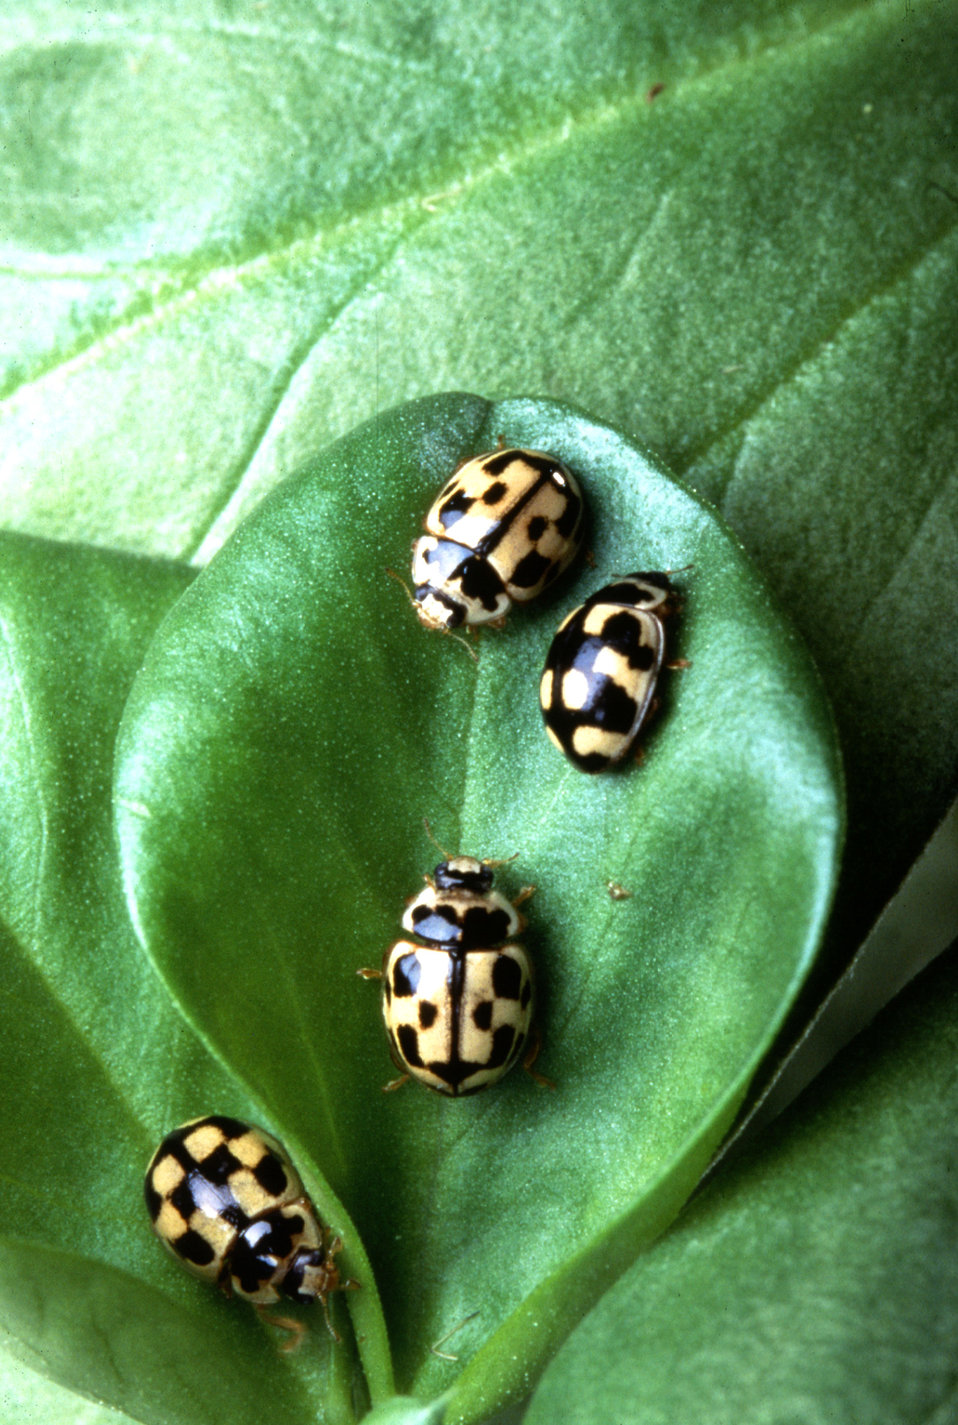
These lady beetles (Propylea quatuordecimpunctata) look for aphids on a fava bean leaf. Scientists think the beetles might be helpful in controlling Russian wheat aphids that now infest 17 Great Plains and Western states.